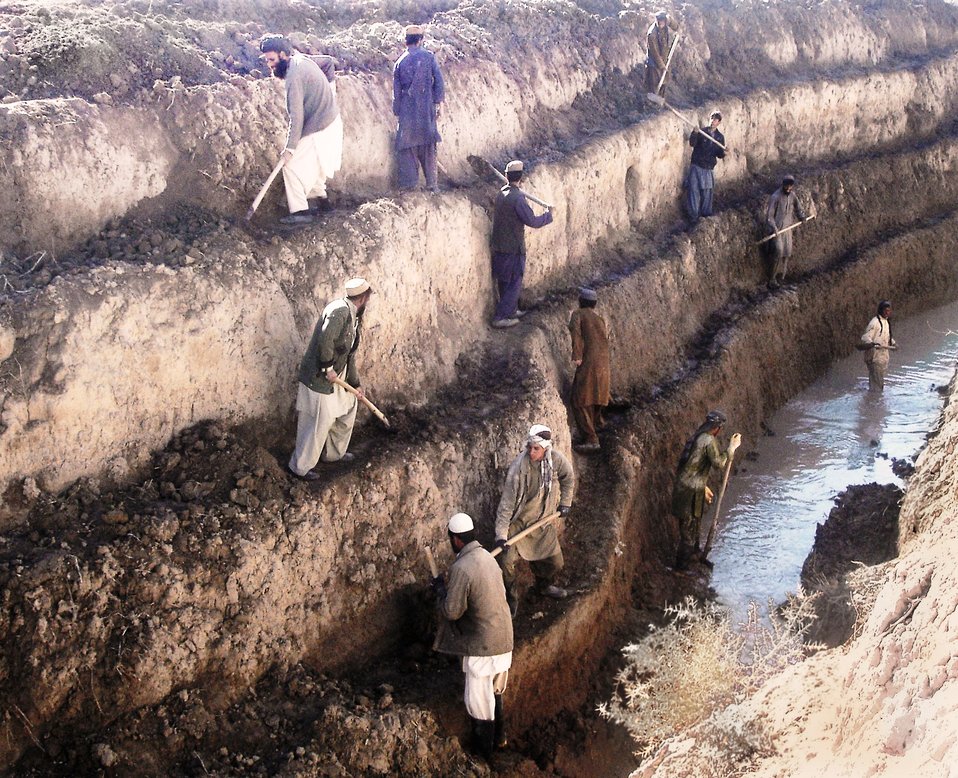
Villagers figured out a way to clean up the deep karez, To achieve this, people from several villages had to learn how to plan, resolve their disputes and work together, with support from USAID’s Stability in Key Areas (SIKA) – East project.